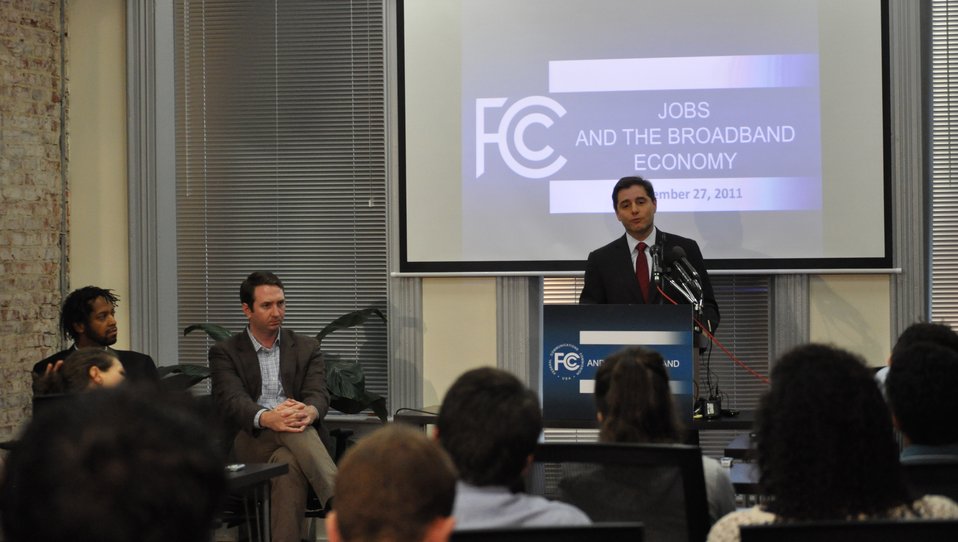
Jobs and the Broadband Economy

FCC Chairman Genachowski